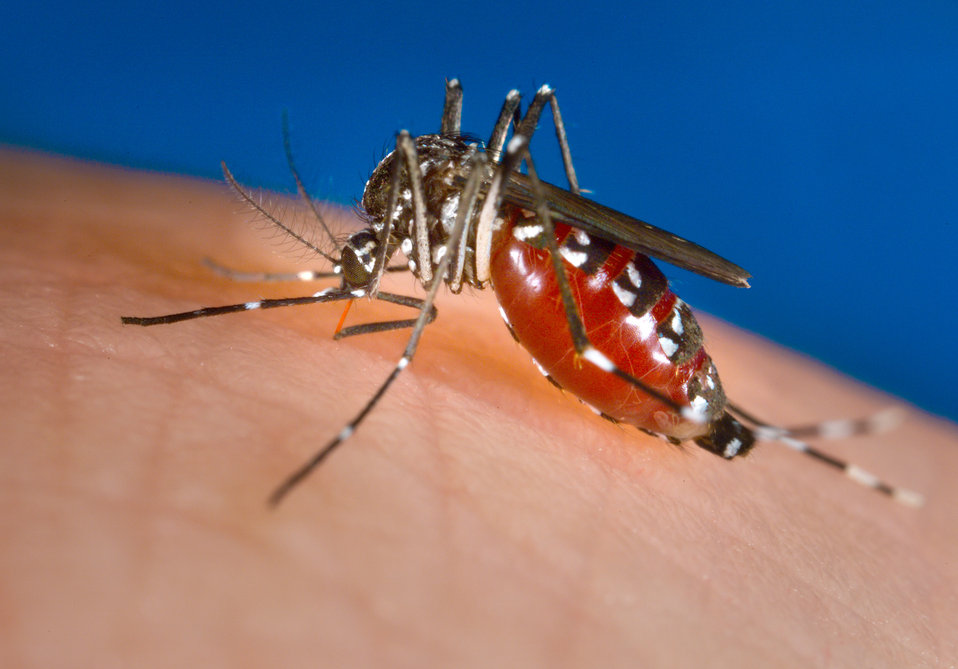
This image depicts an Aedes albopictus female mosquito feeding on a human host.